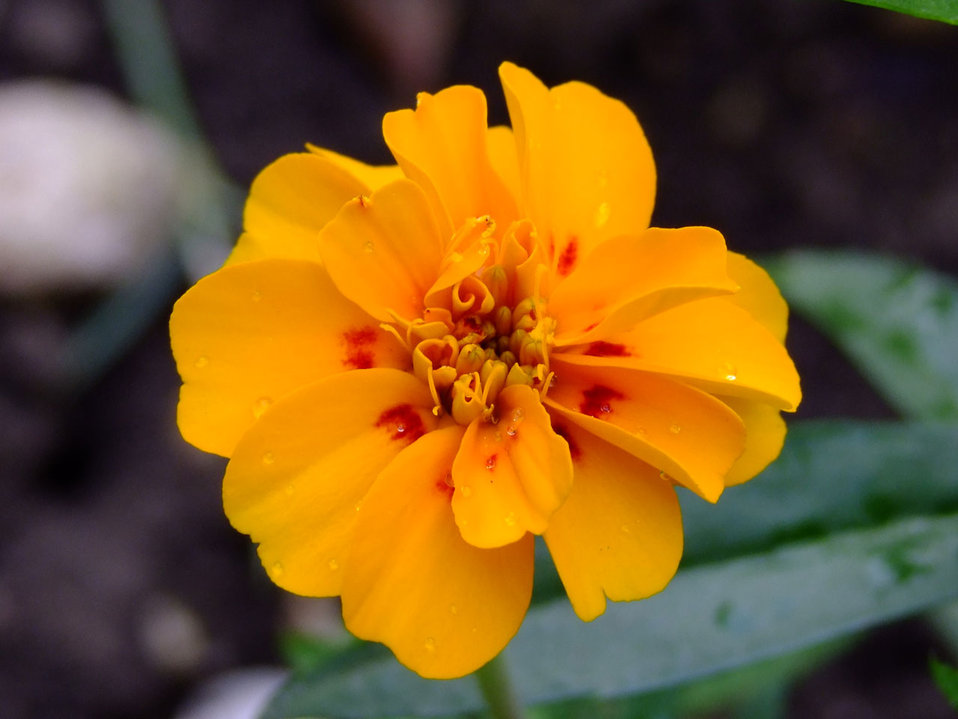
Mana

There is a story that mana (life) energy is falling down to the world in small drops of water.